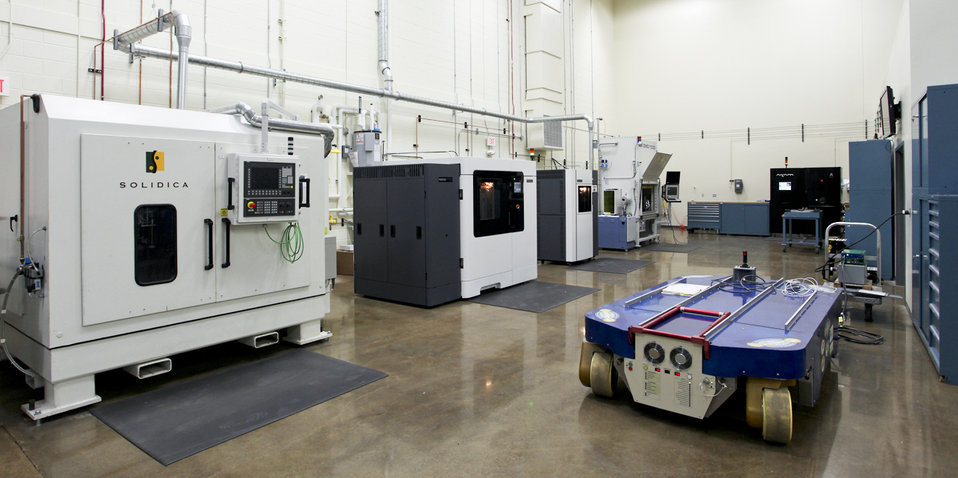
Partnering with Industry

The Energy Department's Manufacturing Demonstration Facility at Oak Ridge National Laboratory includes an array of state-of-the-art additive manufacturing capabilities, allowing researchers and industry to develop innovative manufacturing solutions.